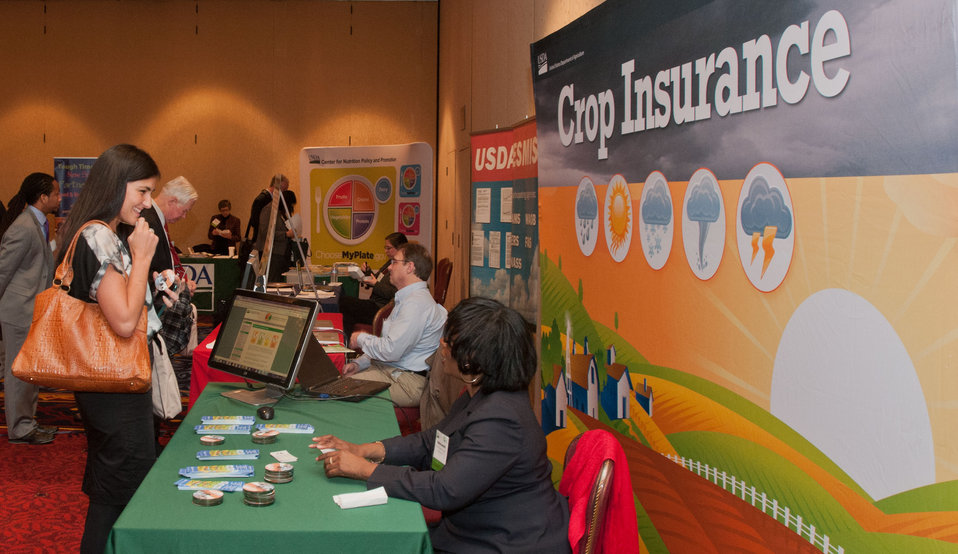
2013 Agricultural Outlook Forum, held at the Crystal Gateway Marriott Hotel, Arlington, Virginia on Thursday, Feb. 21, 2013. This annual Forum brings together producers, policymakers, business, government, and industry leaders to meet, exchange ideas, and discuss timely agriculture issues in the exhibit hall at the Ag Outlook Forum.